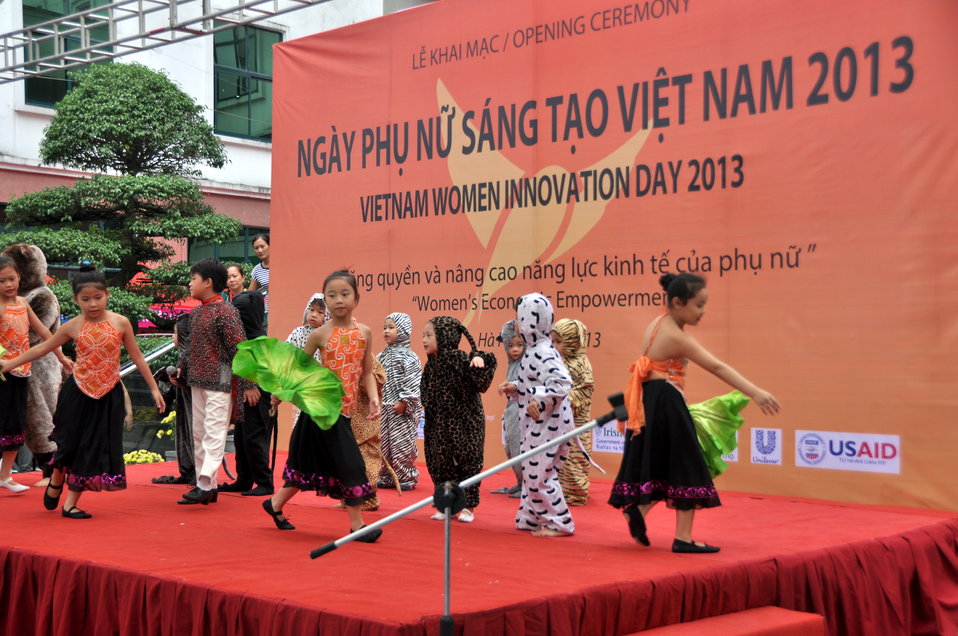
Vietnam Women Innovation Day 2013

Hanoi, October 1, 2013.